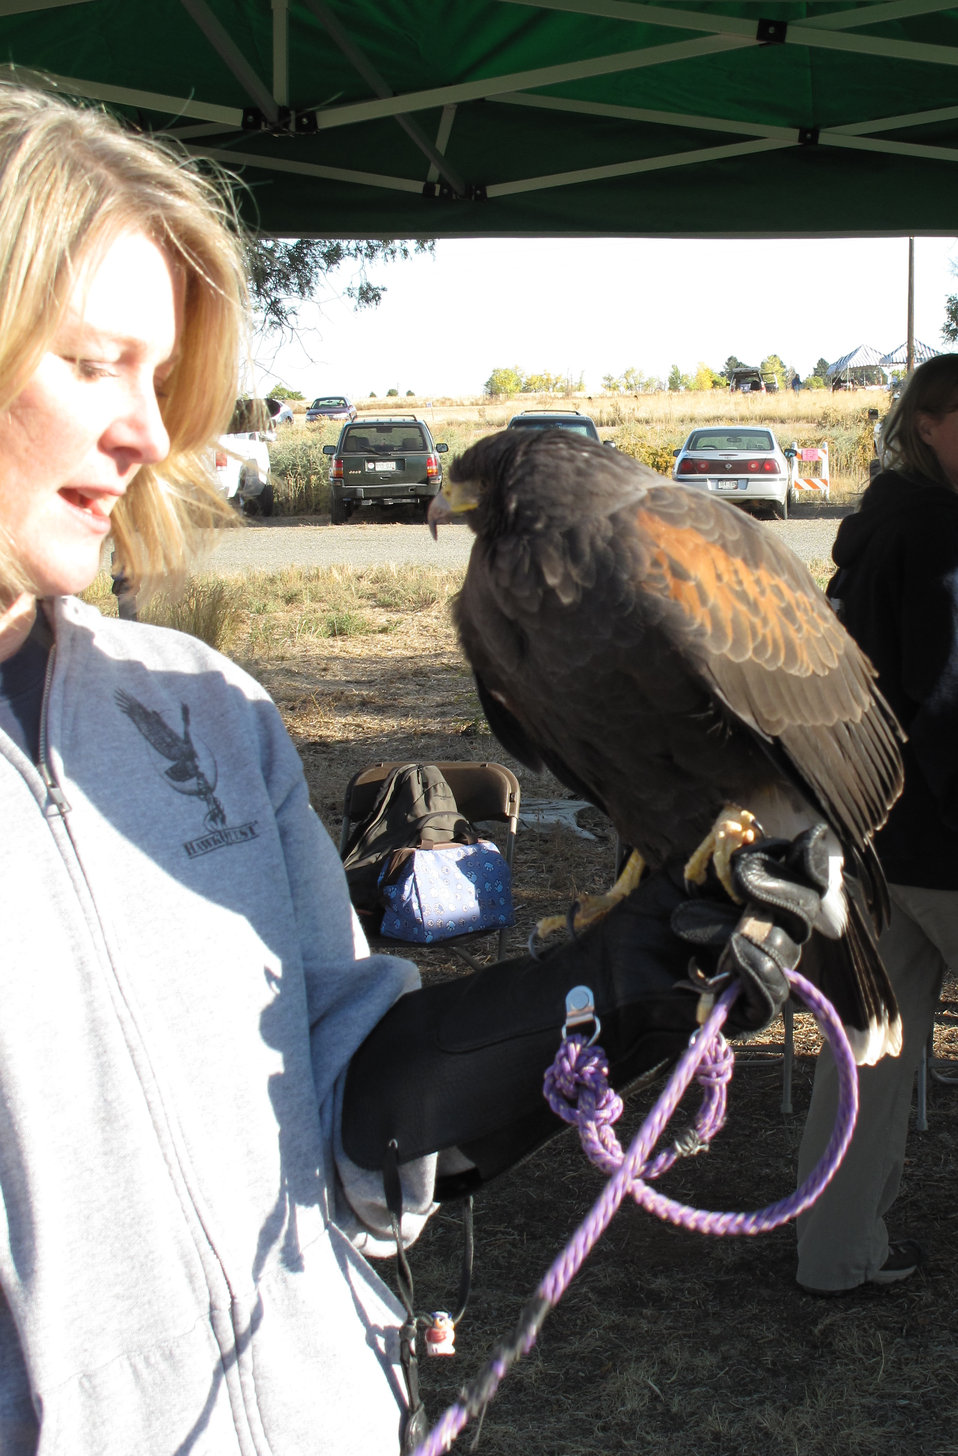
Refuge Round-Up 2010

Hawkquest